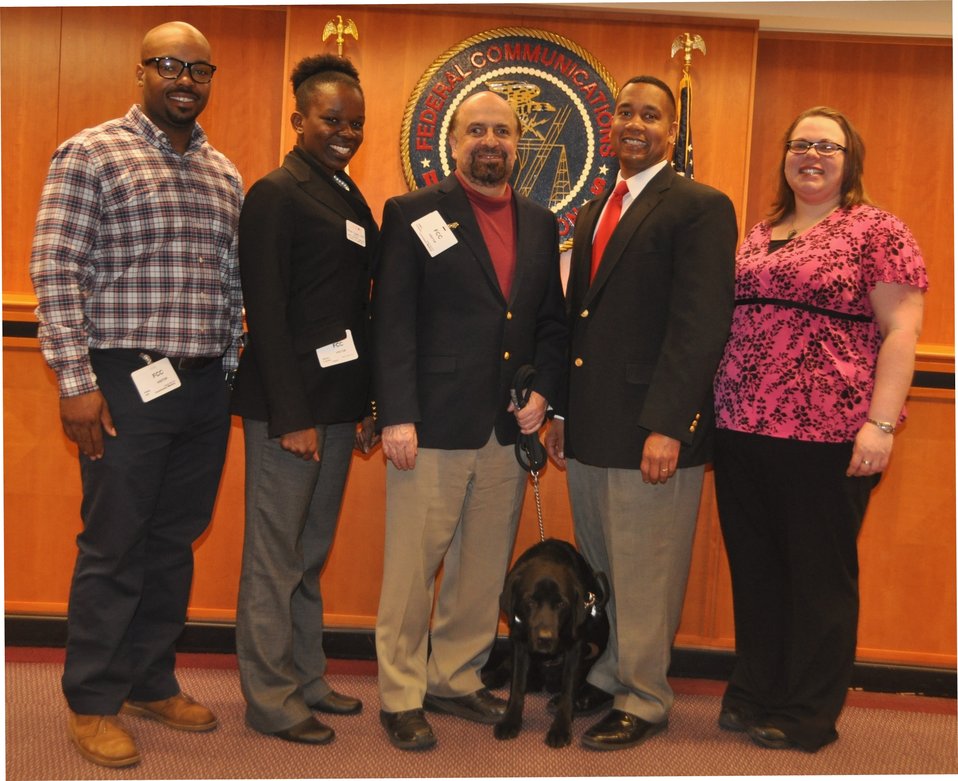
3.11.14 Accessibility and Innovation Initiative Speaker Series

Dr. Gilbert and his Research Team